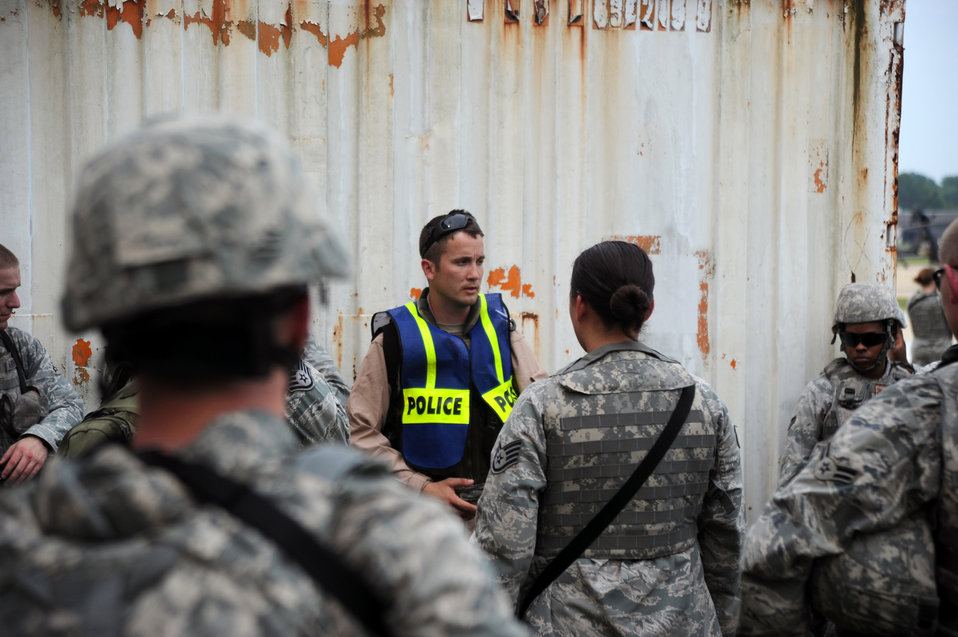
Preparing for battle...

Staff Sgt. Joshua Jewel briefs service members on exercise procedures July 19, 2011, at the training site in Southeast Asia. Members of the 11th Wing Security Forces Squadron and Combat Camera members of the 55th Signal Company performed simulated combat operations after being dropped from a CH-47 Chinook at a remote location. Jewel is a trainer assigned to the 11th Security Forces Group.